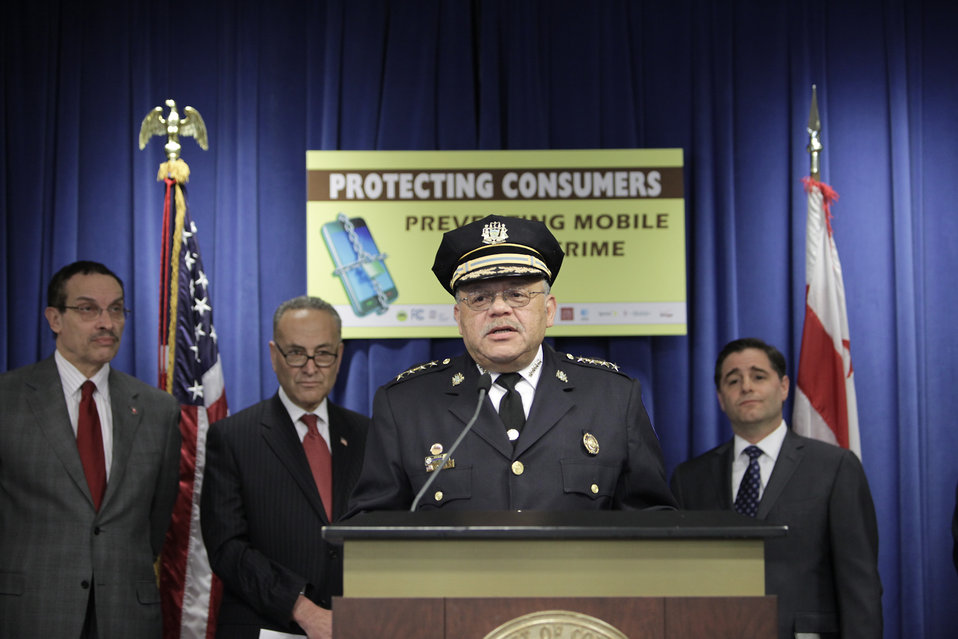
Commissioner Charles Ramsey of the Philadelphia PD speaks in support of the new initiative at the John A. Wilson Building in Washington, DC on April 10, 2012.